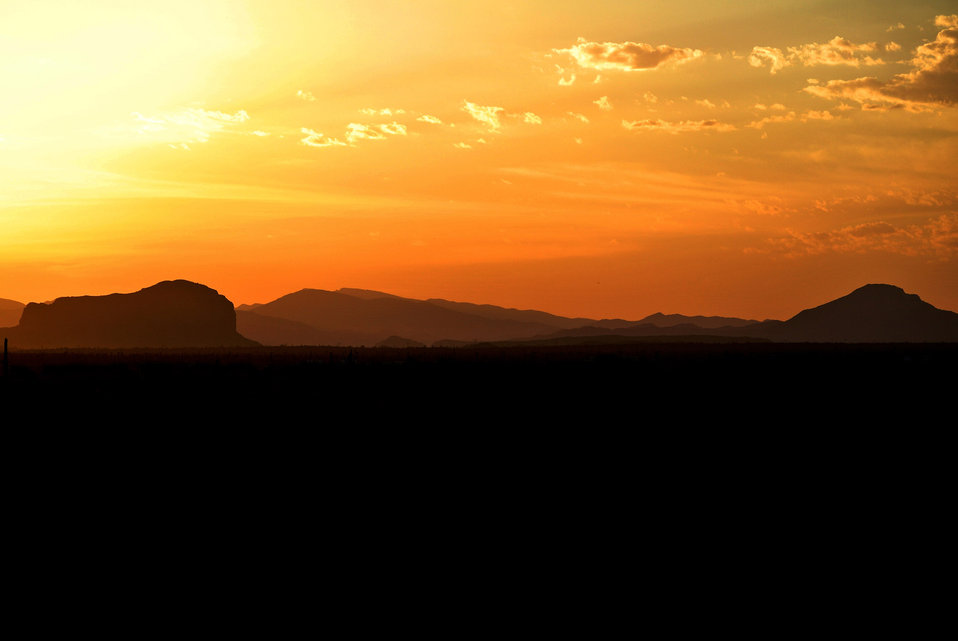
Desert sunrise 601.